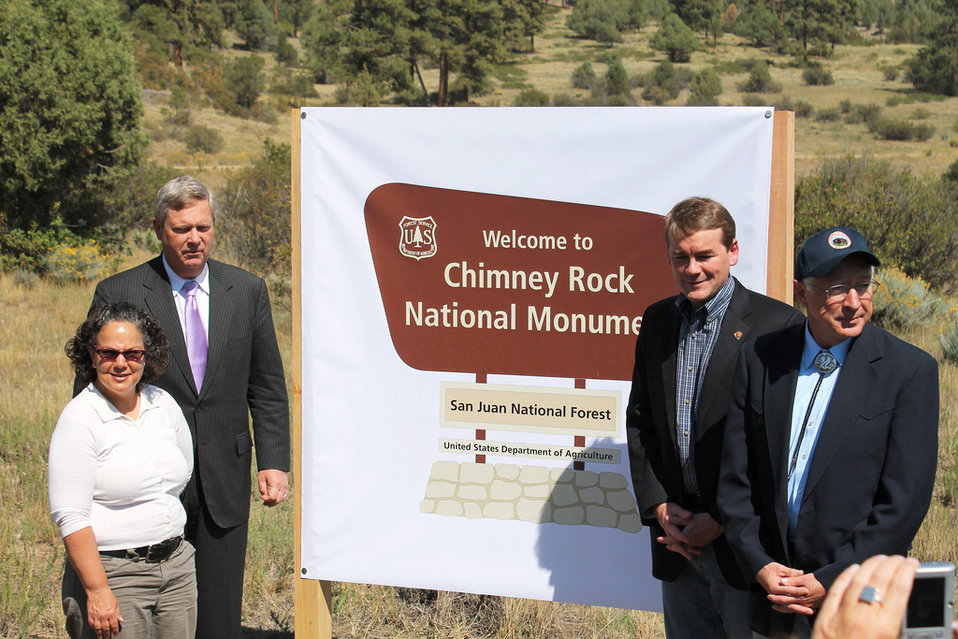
(L to R) White House Council on Environmental Quality Chair Nancy Sutley, Agriculture Secretary Tom Vilsack, Senator Michael Bennet (CO), and Interior Secretary Ken Salazar stand at the welcome sign to Chimney National Monument in the San Juan National Forest in Southwest Colorado on Friday, Sept. 21, 2012. Chimney Rock is of great spiritual importance to Pueblos and other Tribes in the southwest corner of Colorado. With its twin sandstone pillars and its massive Chaco- style masonry walls perched 1,000 feet above the Piedra River Valley the monument protects a landscape important to the continuation of traditional cultural practices of the modern Puebloan Indians.